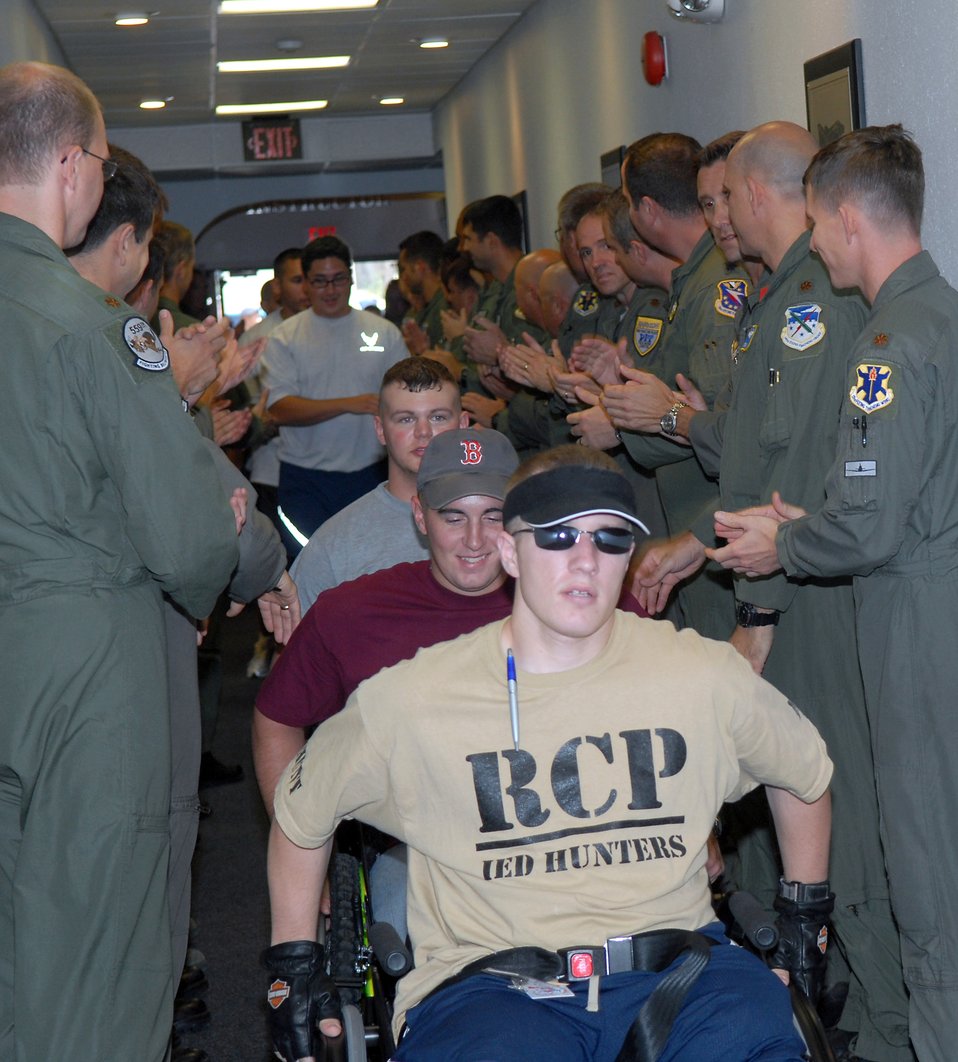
Wounded warriors tour Randolph

Nate Hunt enters the 559th Flying Training Squadron June 27 at Randolph Air Force Base, Texas. He and 12 other wounded warfighters recovering from serious injuries toured the base and flew a simulator at the 559th Flying Training Squadron. The wounded warriors are currently receiving care at the Center for the Intrepid at Brooke Army Medical Center in San Antonio.